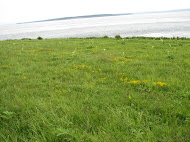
Golden paintbrush

Scientific name: Castilleja levisecta
Status: Threatened
Golden paintbrush prairie habitat